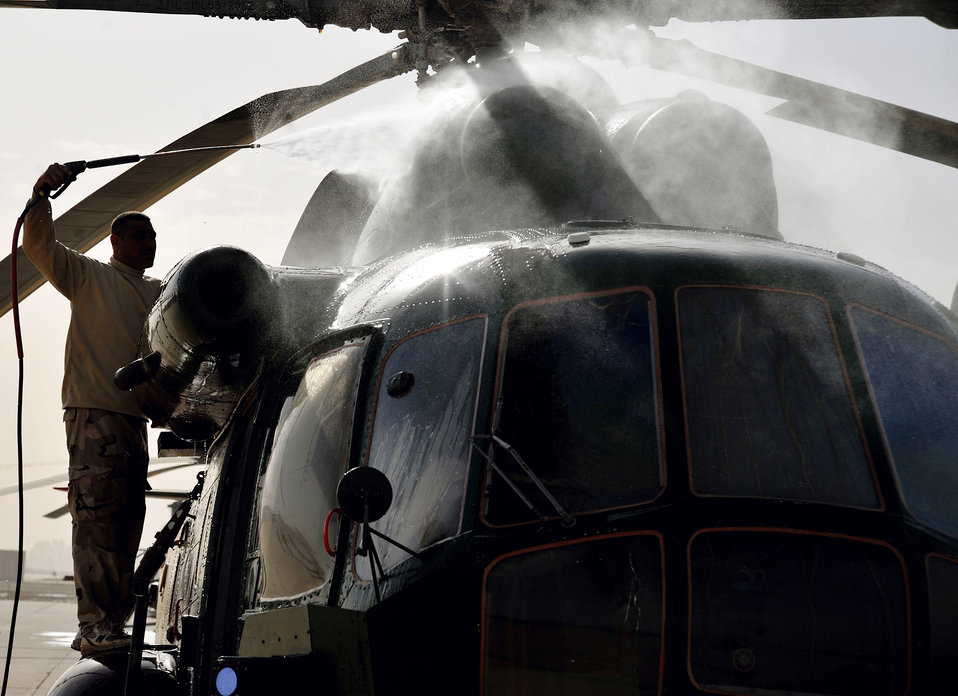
721st AEAS

An Iraqi Army Aviation Command soldier washes the dirt off of an Mi-17 helicopter Dec. 11, 2010, on the flightline in Taji, Iraq. Air advisers with the 721st AEAS work with AAC members at Taji to advise and assist them in building a safe, self-sustaining Iraqi rotary-wing force.